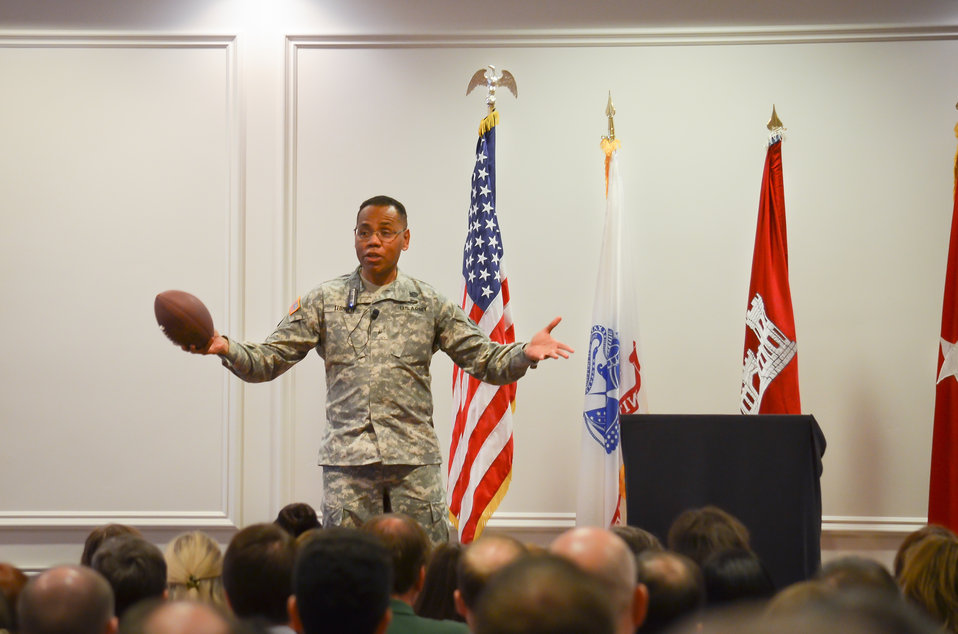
Brigadier Gen. David Turner visits Sacramento District employees

Brigadier Gen. David Turner, commander of U.S. Army Corps of Engineers South Pacific Division, prepares to pass a football to an employee while discussing the value and fundamentals of teamwork during a town hall meeting with Corps employees in Sacramento, Calif., May 1, 2014. Turner also visited Corps projects in the surrounding region during his two-day visit with the Corps' Sacramento District leadership and staff.